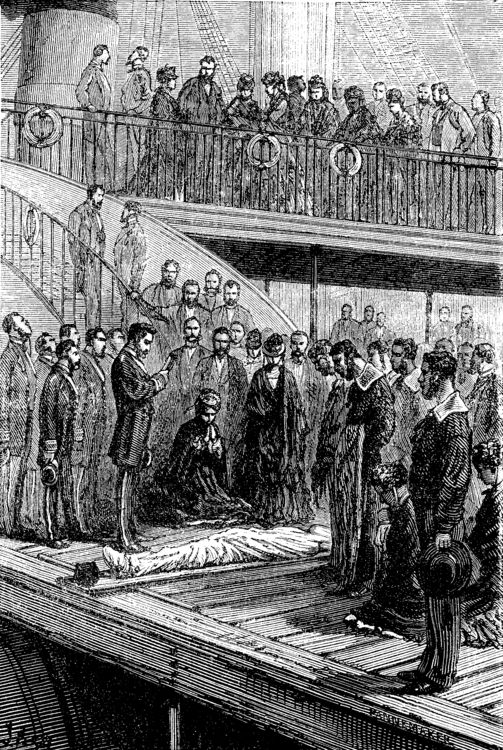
An illustration from Jules Verne's novel 'A Floating City' (1869) drawn by Jules Férat. Polski: Ilustracja powieści Juliusza Verne'a 'Pływające miasto' (1869) autorstwa Julesa Férata. Français : Jules Verne: 'Une Ville flottante' (1869), dessins par Jules Férat. Orginal text: Français : La prière des morts.